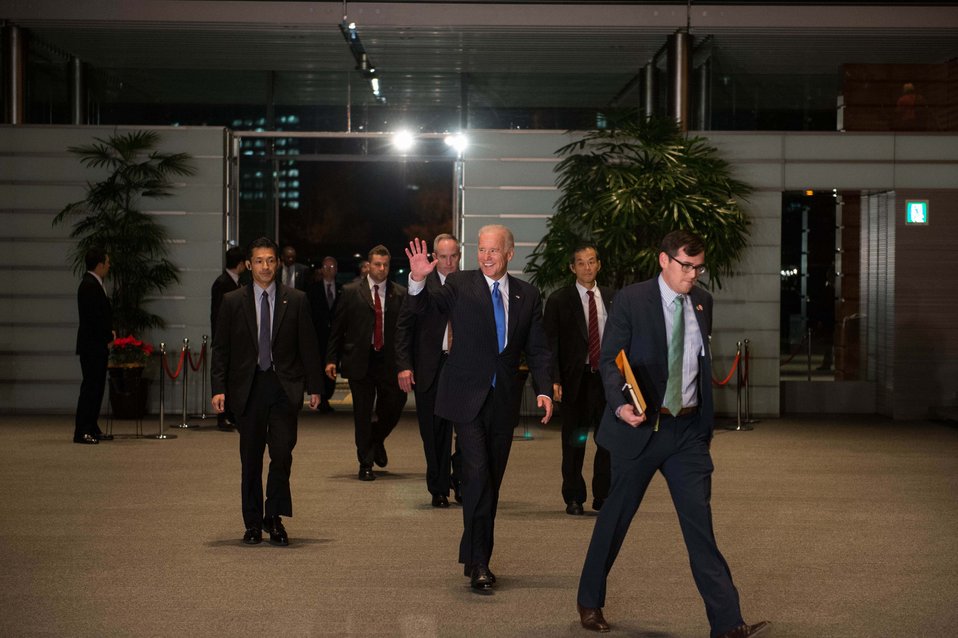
Vice President Biden Enters the Japanese Prime Minister’s Official Residence

Vice President Joseph Biden walks into Japanese Prime Minister Shinzo Abe’s Official Residence -- Kantei -- for their bilateral meeting in Tokyo, Japan, on December 3, 2013.